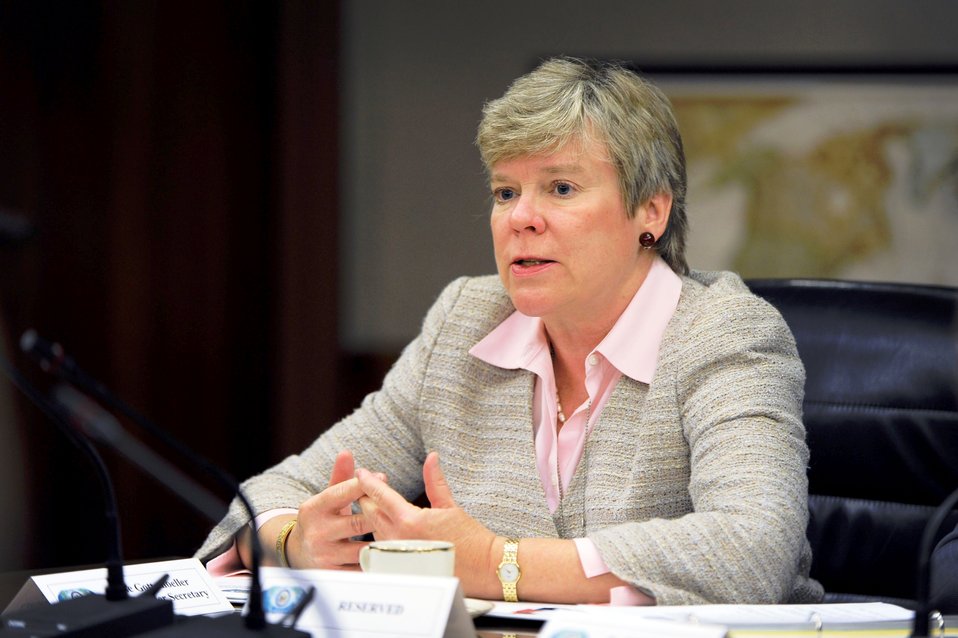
Acting Under Secretary Gottemoeller Meets With ISAB Members

Acting Under Secretary of State for Arms Control and International Security Rose Gottemoeller meets with members of the International Security Advisory Board (ISAB), chaired by former Secretary of Defense William Perry, at the U.S. Department of State in Washington, D.C., September 13, 2012.